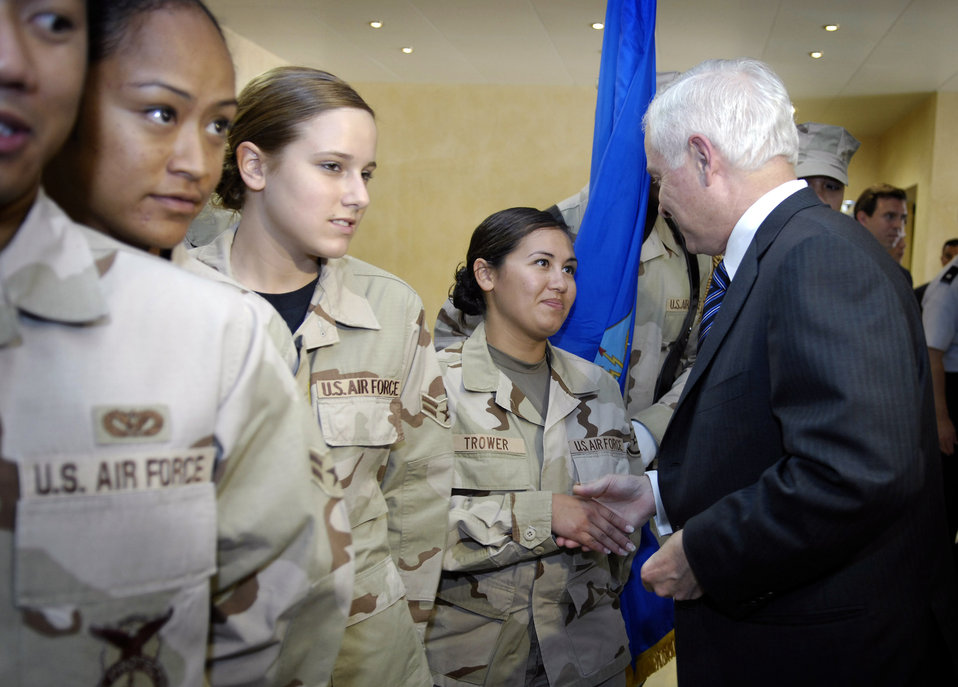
Top-level meeting

Secretary of Defense Robert M. Gates shakes hands with Airmen at a forward operating location in Southwest Asia Aug. 2. Secretary Gates described his four-day trip as